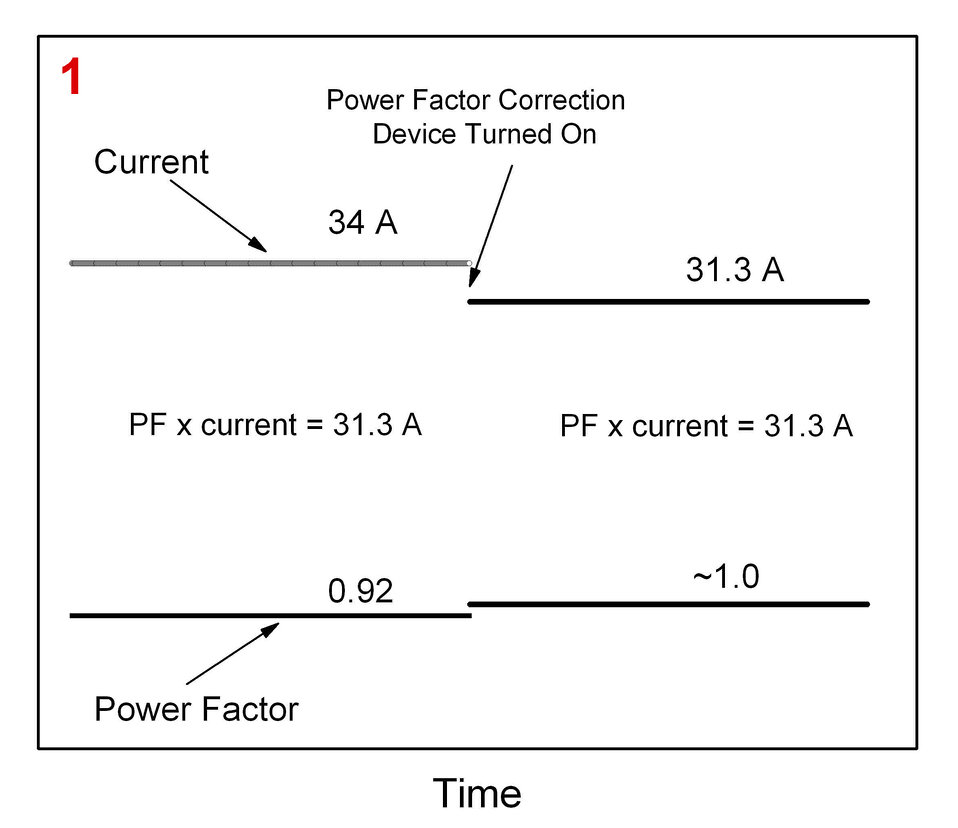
Power Factor Correction Devices

(1) Power factor correction devices have no effect on a typical household electric bill because of the relationship shown hereactivating the device reduces the current drawn from a power line but simultaneously increases the power factor. Electric bills are based on the product of the two, which remains the same.